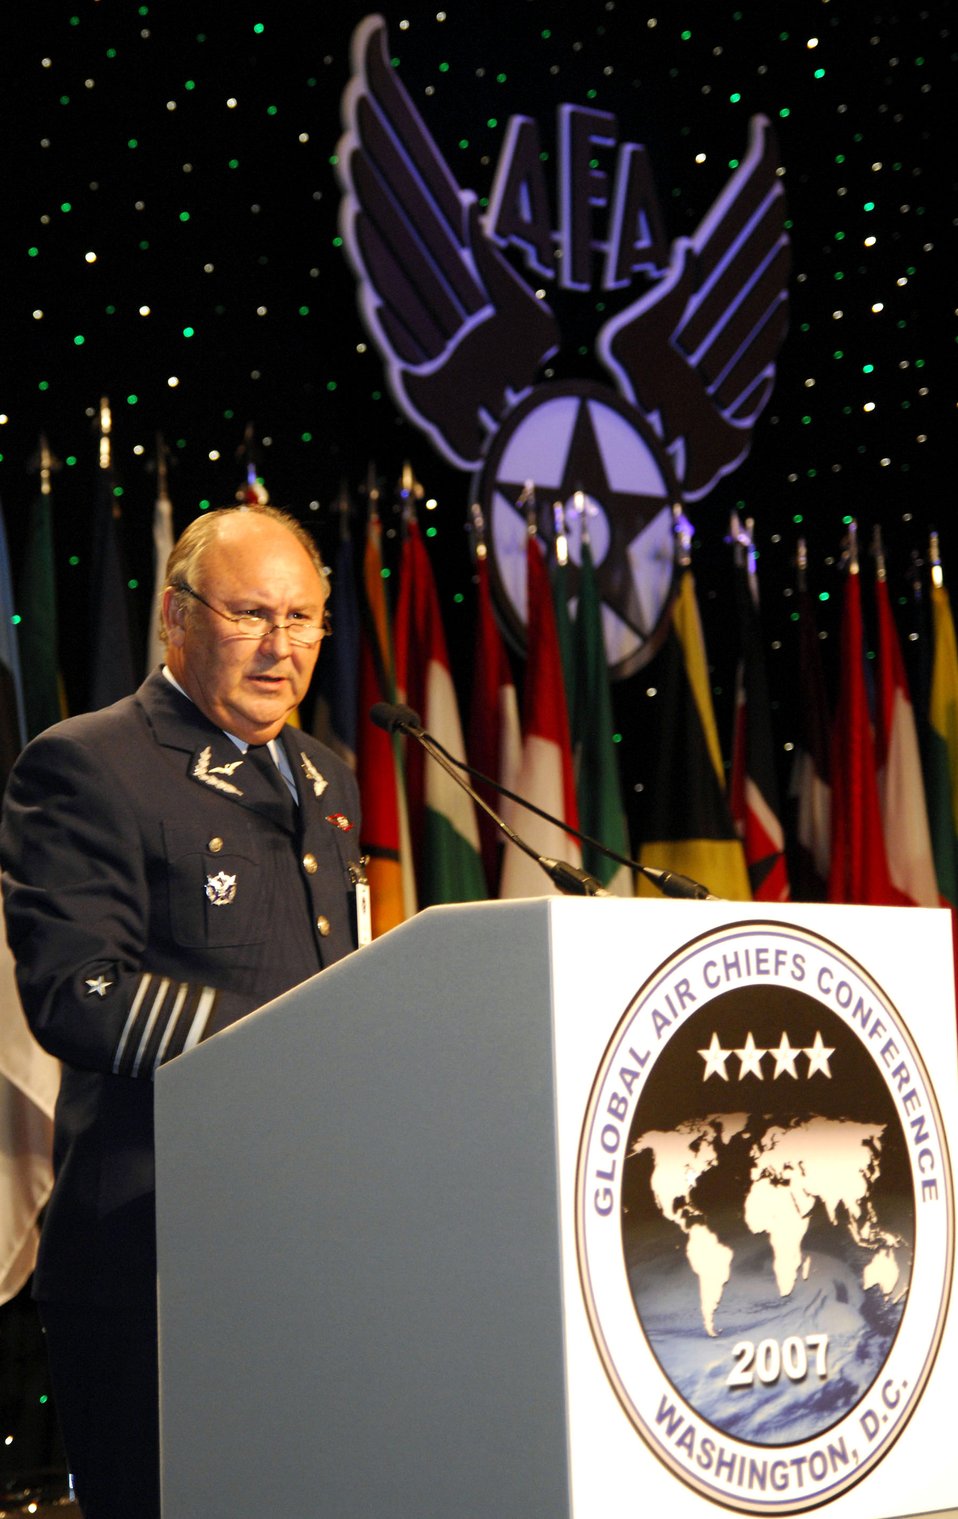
Global Air Chiefs Conference hosts second air chiefs forum

Gen. Ricardo Ortego Perrier addresses more than 90 international air chiefs Sept. 25 at one of three air chiefs' forums held during the Global Air Chiefs Conference in Washington. The GACC, hosted by Gen. T. Michael Moseley, runs concurrently with the Air Force Association's Air & Space Conference and Technology Exposition. General Perrier is the Chilean air force commander in chief. General Moseley is the U.S. Air Force chief of staff.